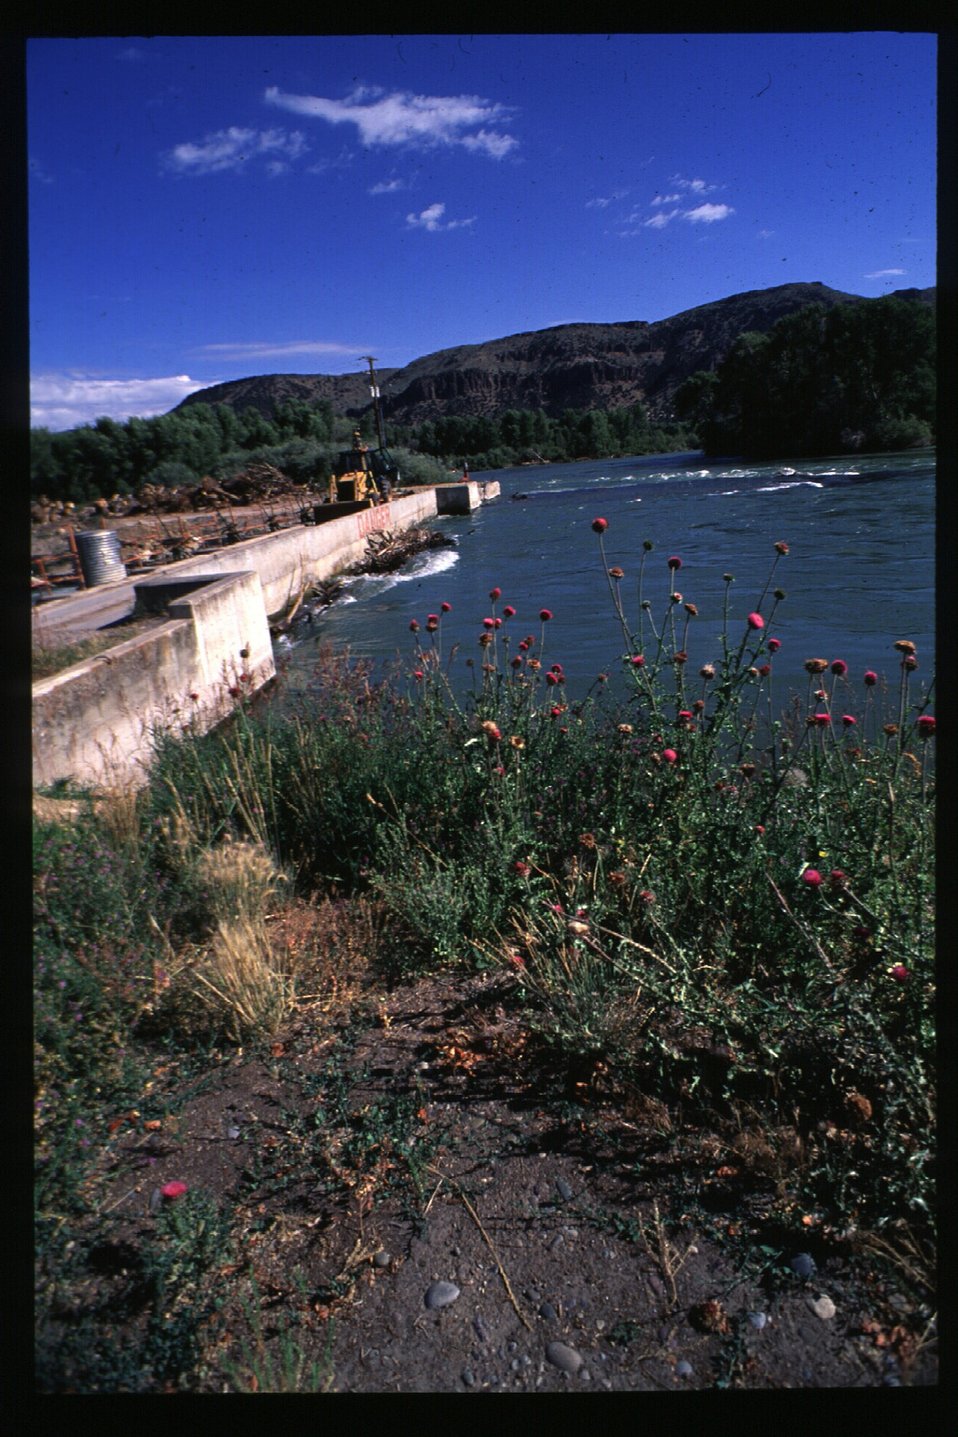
Scenics and recreation South Snake River Great Feeder Diversion Dam USRD Upper Snake River District